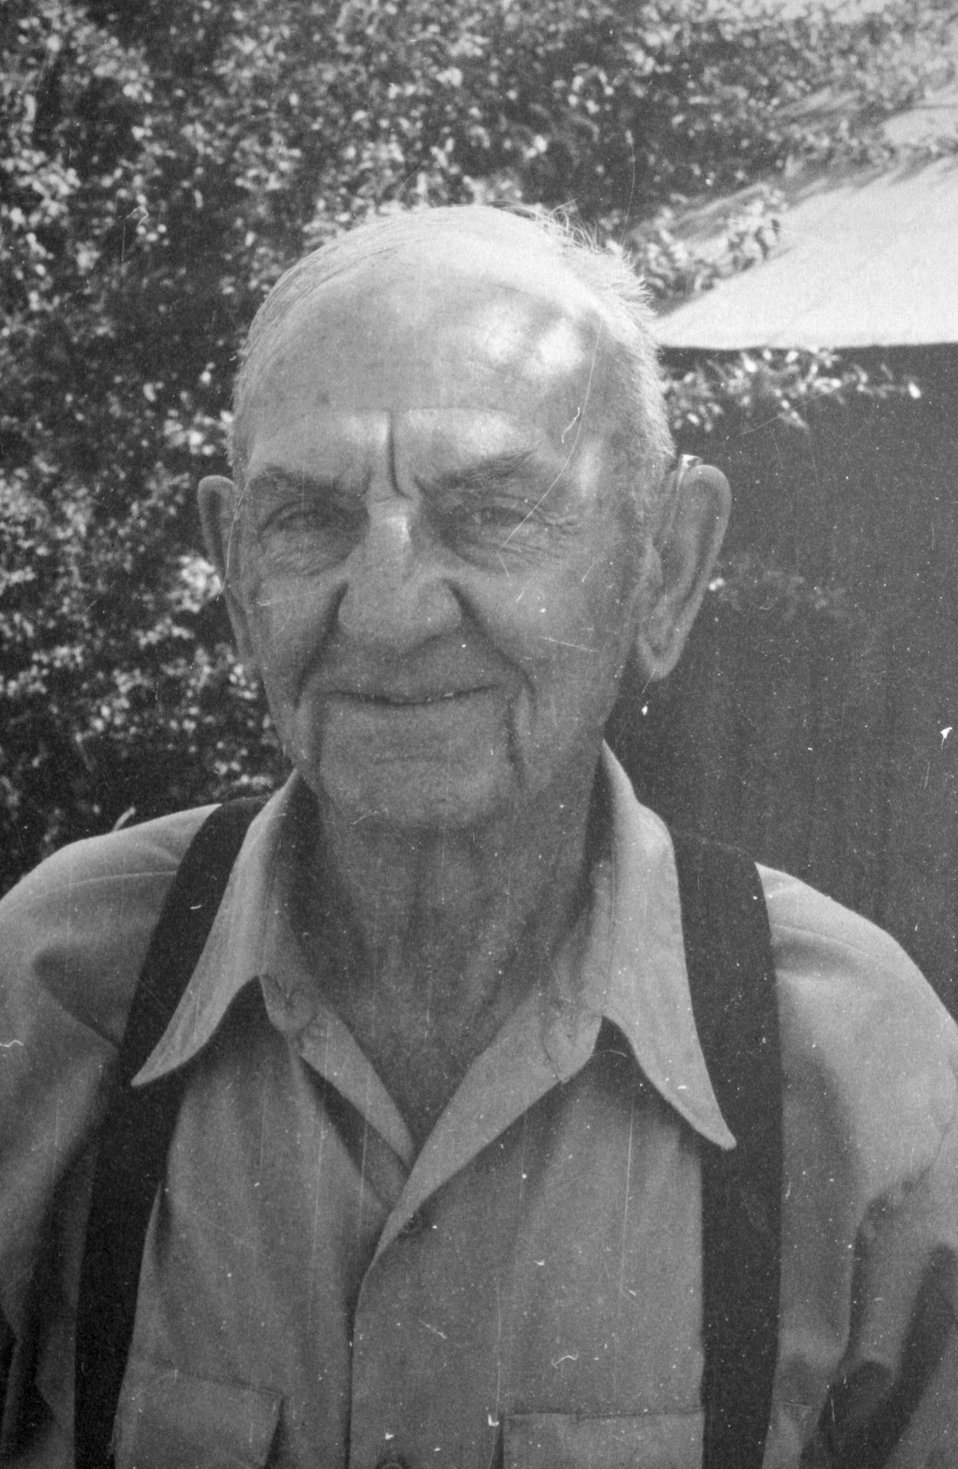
Glen Woodridge